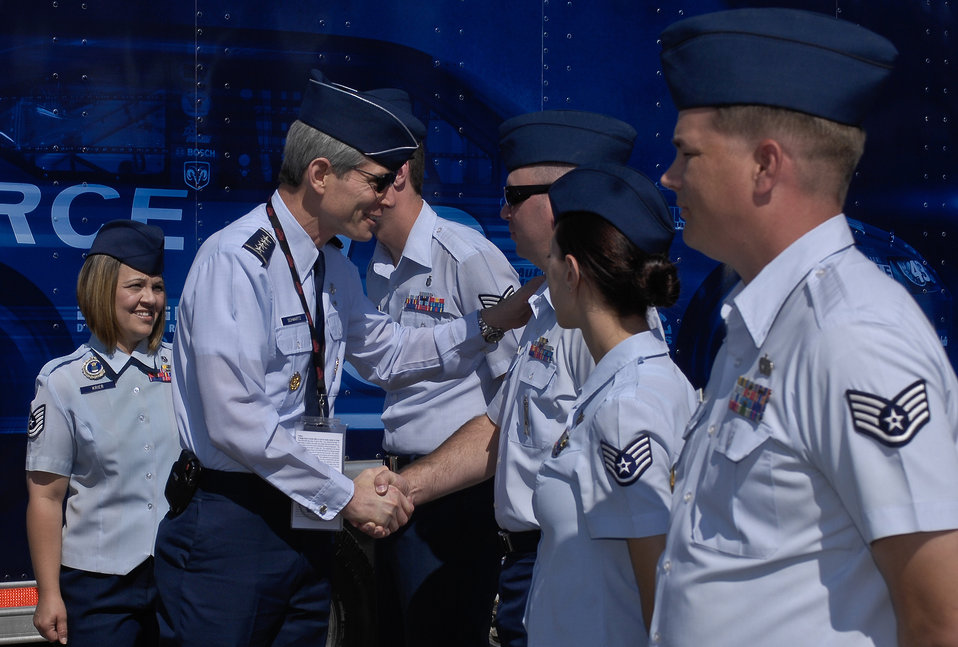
Air Force at Talladega

Air Force Chief of Staff Gen. Norton Schwartz meets recruiters from the 331st recruiting squadron April 26 at the Talladega Superspeedway in Talladega, Ala. General Schwartz was at the NASCAR race in Talladega, Ala., to watch the #43 car run. The car, driven by Reed Sorenson, featured the Air Force primary paint scheme for the first time.